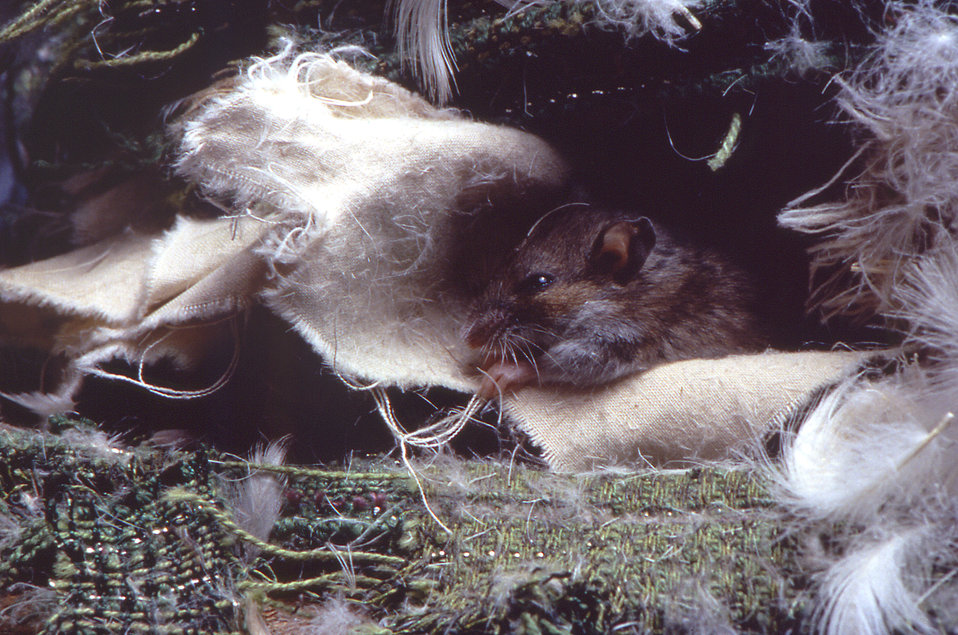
This image depicts a deer mouse, Peromyscus maniculatus which had made its home amongst deteriorating sheets of fabric and bird feathers.